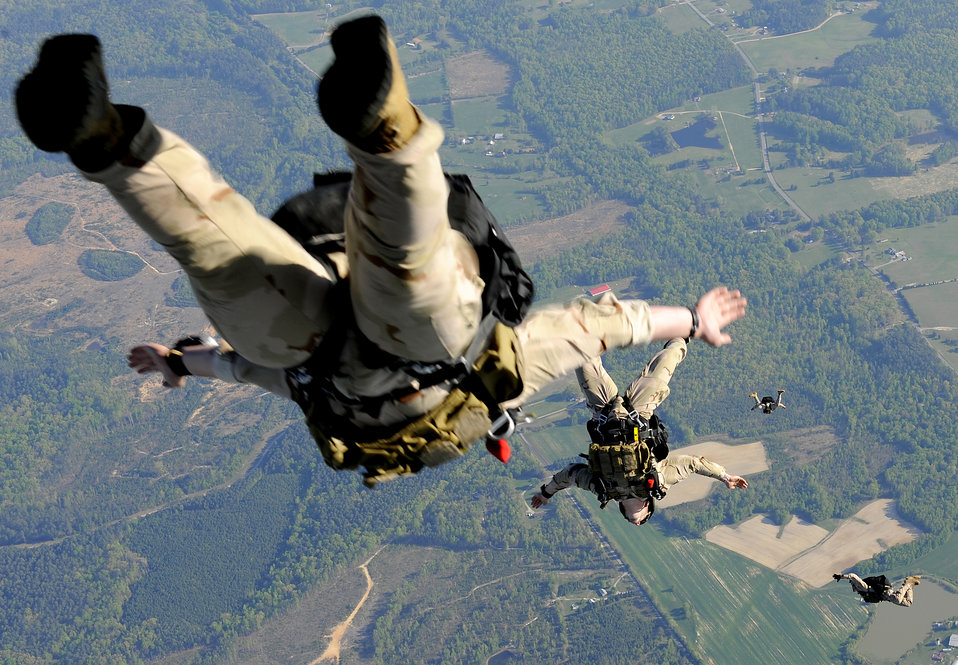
Joint training at 12,500 feet

Navy SEALs jump from the ramp of a C-17 Globemaster III April 15, 2010, over Fort Pickett Maneuver Training Center, Va. The jump was part of joint training exercise with 517th Airlift Squadron members from Elmendorf Air Force Base, Alaska.